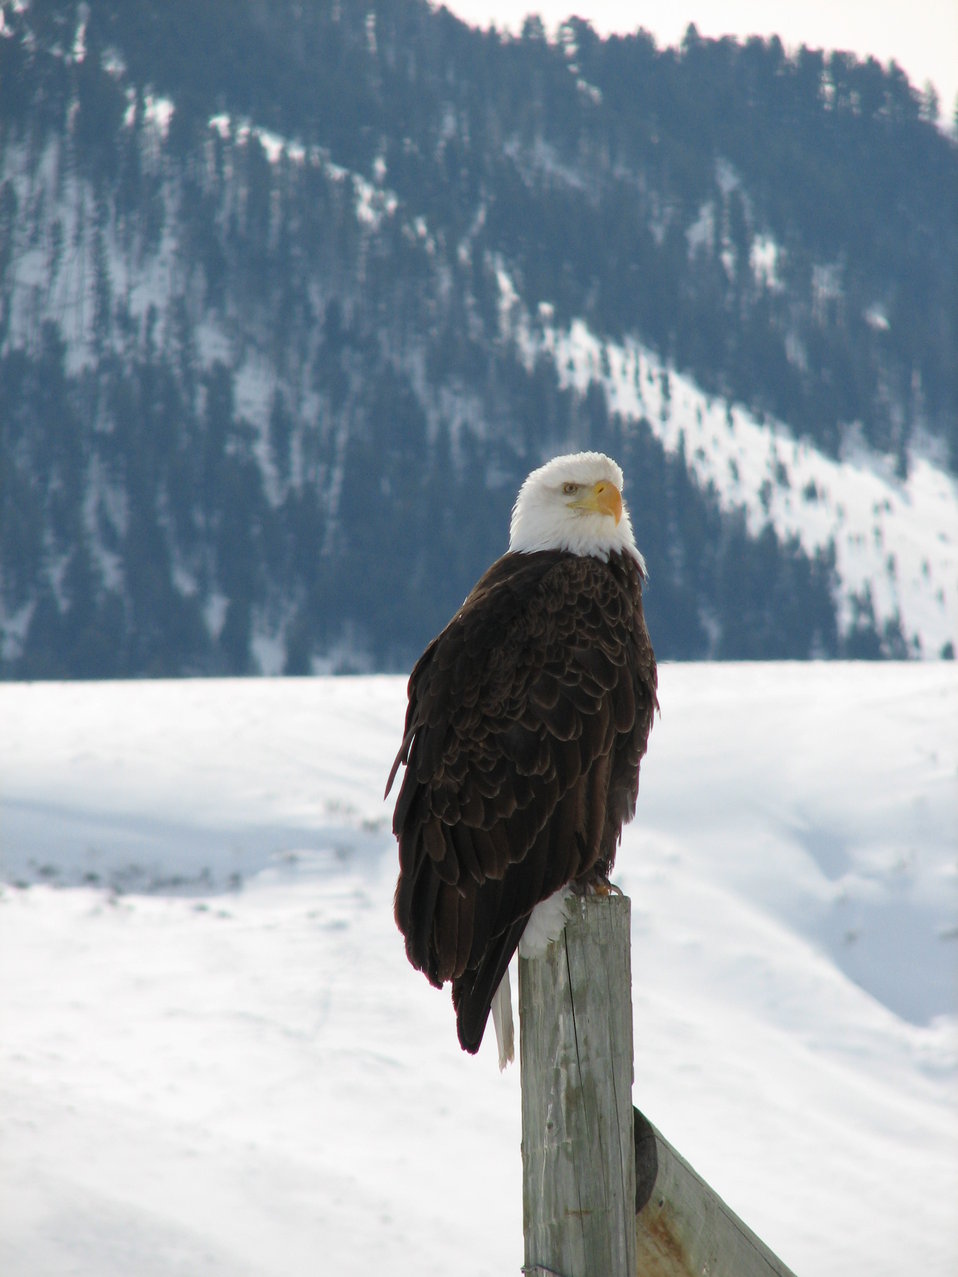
A Watchful Eagle Keeps Post on a Winter Day

Bald eagles can commonly be seen on the National Elk Refuge in Wyoming during the winter. The birds, which are scavengers, are drawn to the refuge when large numbers of elk are present.